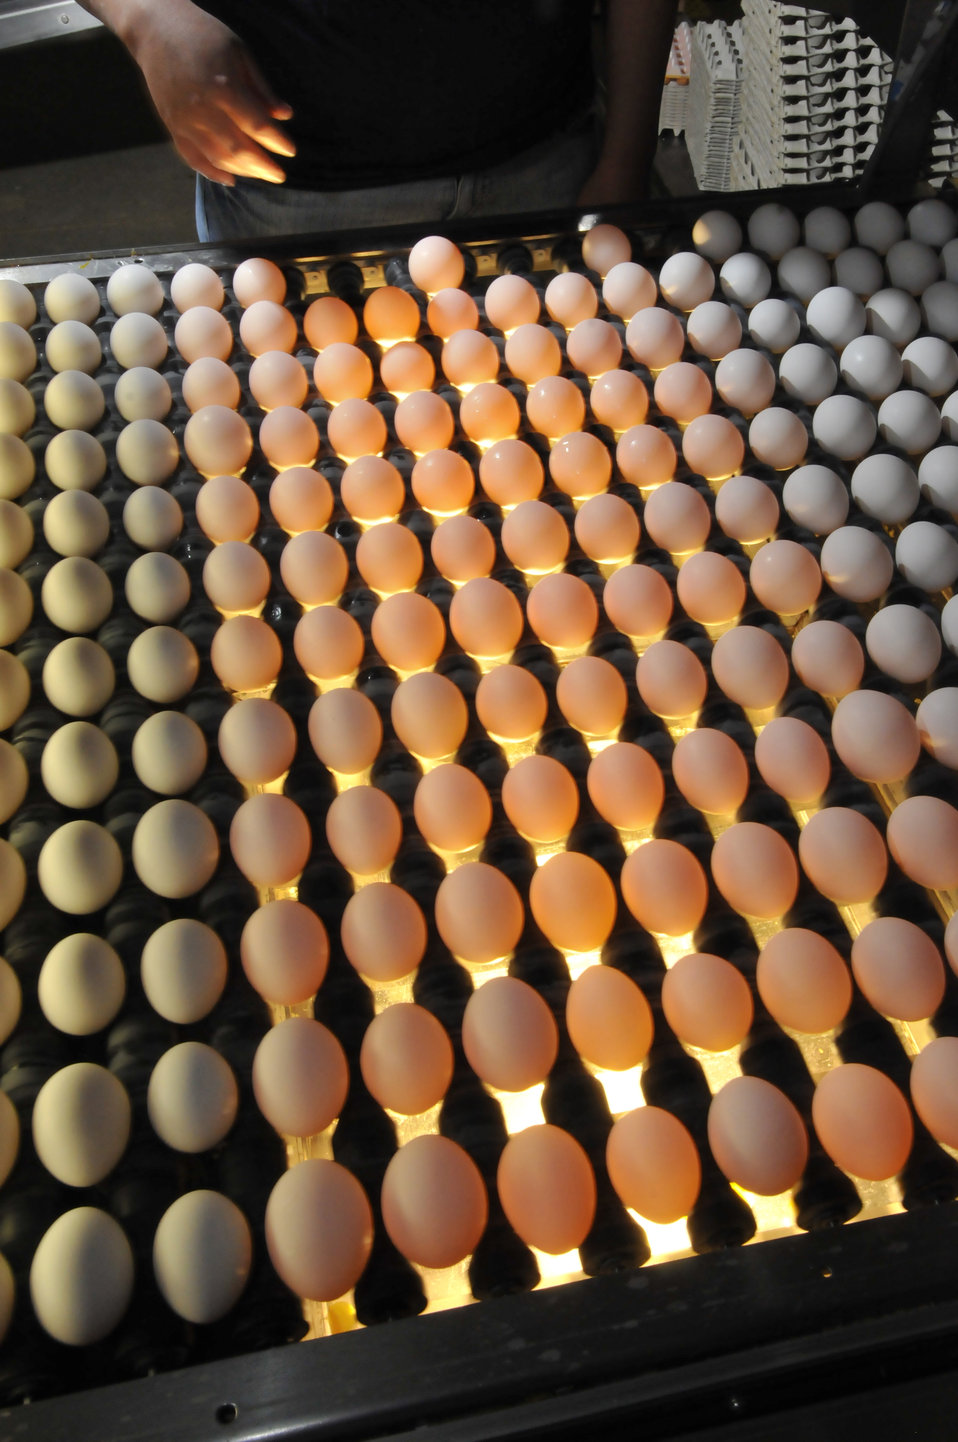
Shell eggs are graded at Cal-Maine Foods Inc. in Green Forest, Arkansas by the U.S. Department of Agriculture (USDA) Agricultural Marketing Service (AMS) on March 24, 2010. Shell eggs are produced on farms with a few thousand laying chickens or in large laying complexes with over a million layers. All shell eggs are eligible for the grading and certification services provided by the USDA AMS Poultry Programs.